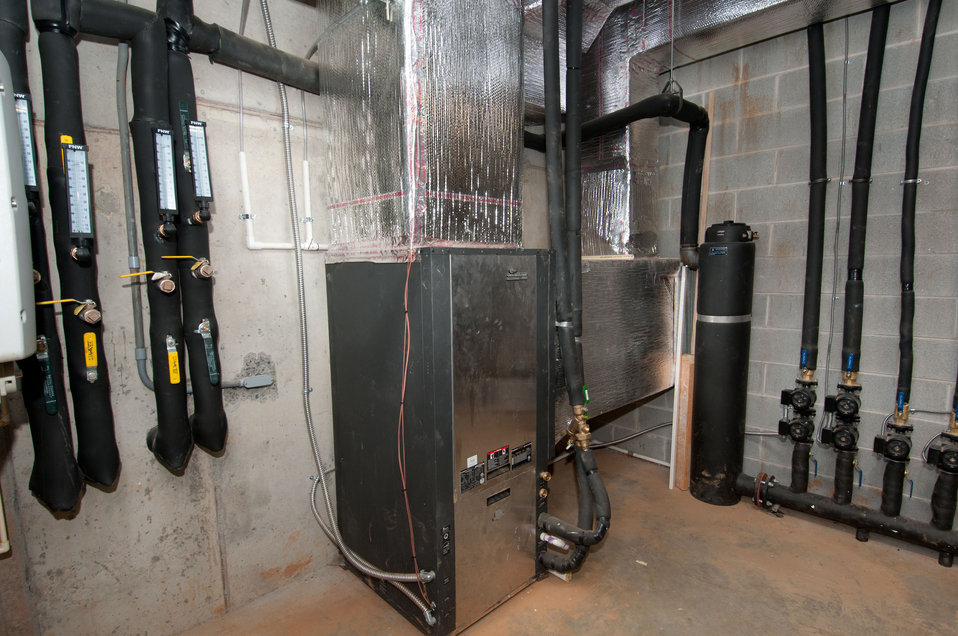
Part of the geothermal system at Cooper Vineyards in Louisa, VA, the first winery on the East Coast and the second in the country to be awarded the fourth and highest, Platinum certification by Leadership in Energy and Environmental Design (LEED).
From a Virginia Wine Board Marketing Office press release, “The process of building a LEED platinum certified building was initially more expensive and arduous than co-owners, Jacque Hogge, MD and Geoffrey Cooper, MD expected, but they were able to get financial assistance from the United States Department of Agriculture. “Know that there are grants available to help with the costs of sustainable building projects,” Hogge advises to other potential green wineries. Cooper Vineyards received 2 of the 3 USDA (U.S. Department of Agriculture Rural Development (RD) Rural Energy Financing program) grants awarded in Virginia in 2010 to help with the expenses of their construction.”
Rural Energy Financing program focuses on loan guarantees, loans and grants to agricultural producers, businesses, cooperatives and rural residents for renewable energy systems and to make energy efficiency improvements.
The tasting room and building collects rainwater from the roof; uses low flow water fixtures to reduce usage by 40%; utilizes structurally insulated panels for the roof and walls; heats and cools the entire building using a geothermal system that includes pipes that are embedded in the parking lot; low-voltage LED lighting with daylight and occupancy sensors provide ample light when it is needed; a solar panel array provides more than 15% of the energy needs for the building, and much of the construction materials are from local and recycled material sources. For more information about USDA please go to www.usda.gov, Rural Development and Rural Energy Financing. LEED was developed by the U.S. Green Building Council (USGBC) is a 501 c3 non-profit organization committed to a prosperous and sustainable future for our nation through cost-efficient and energy-saving green buildings.